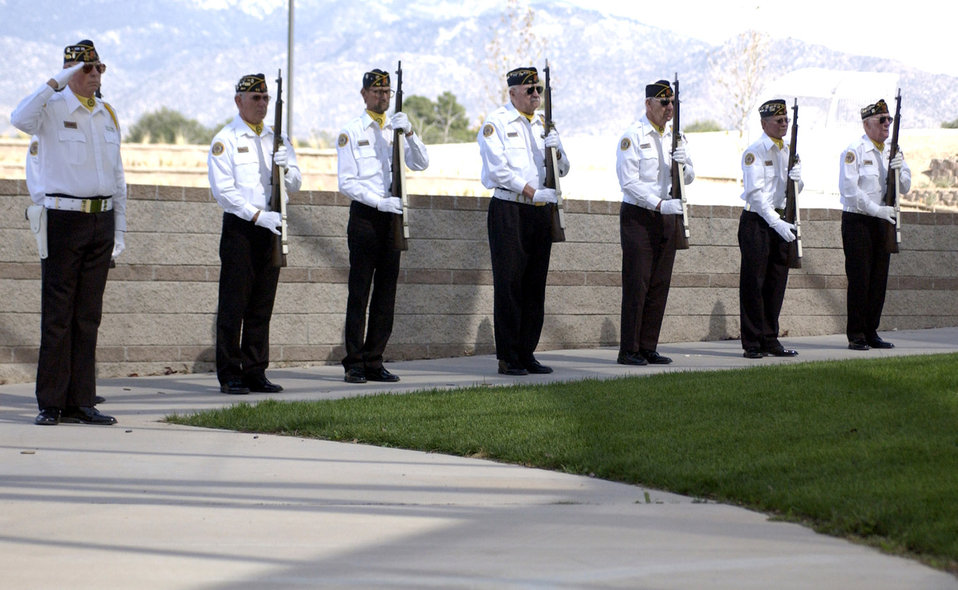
Seeds of 56-year marriage planted during Berlin Airlift

Members of the Albuquerque American Legion present arms during the Berlin Airlift plaque dedication at Veterans Memorial Park in Albuquerque, N.M. Oct. 4. There were more than 150 attendees at the dedication.